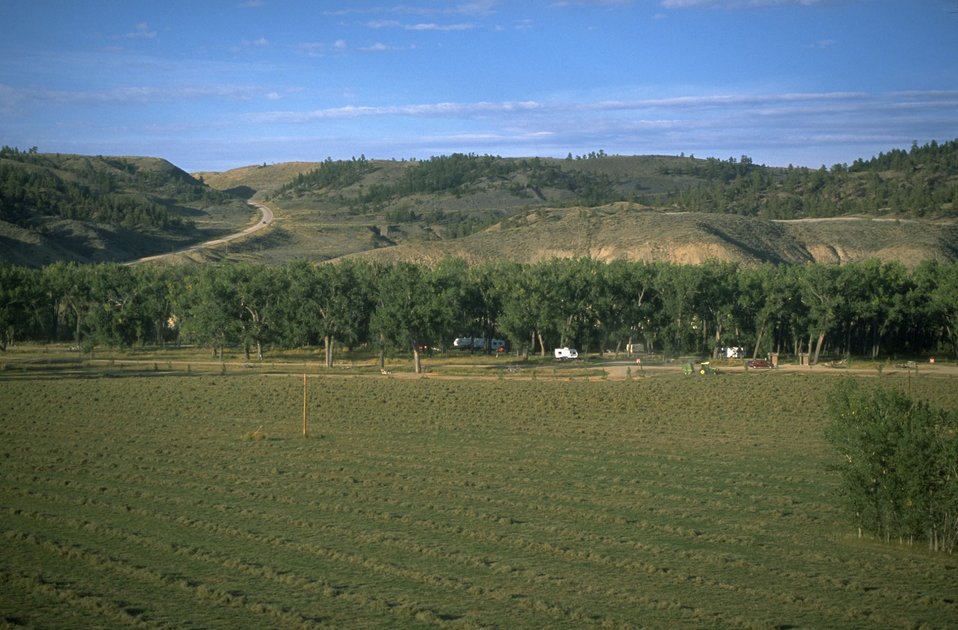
Kipp Recreation Area